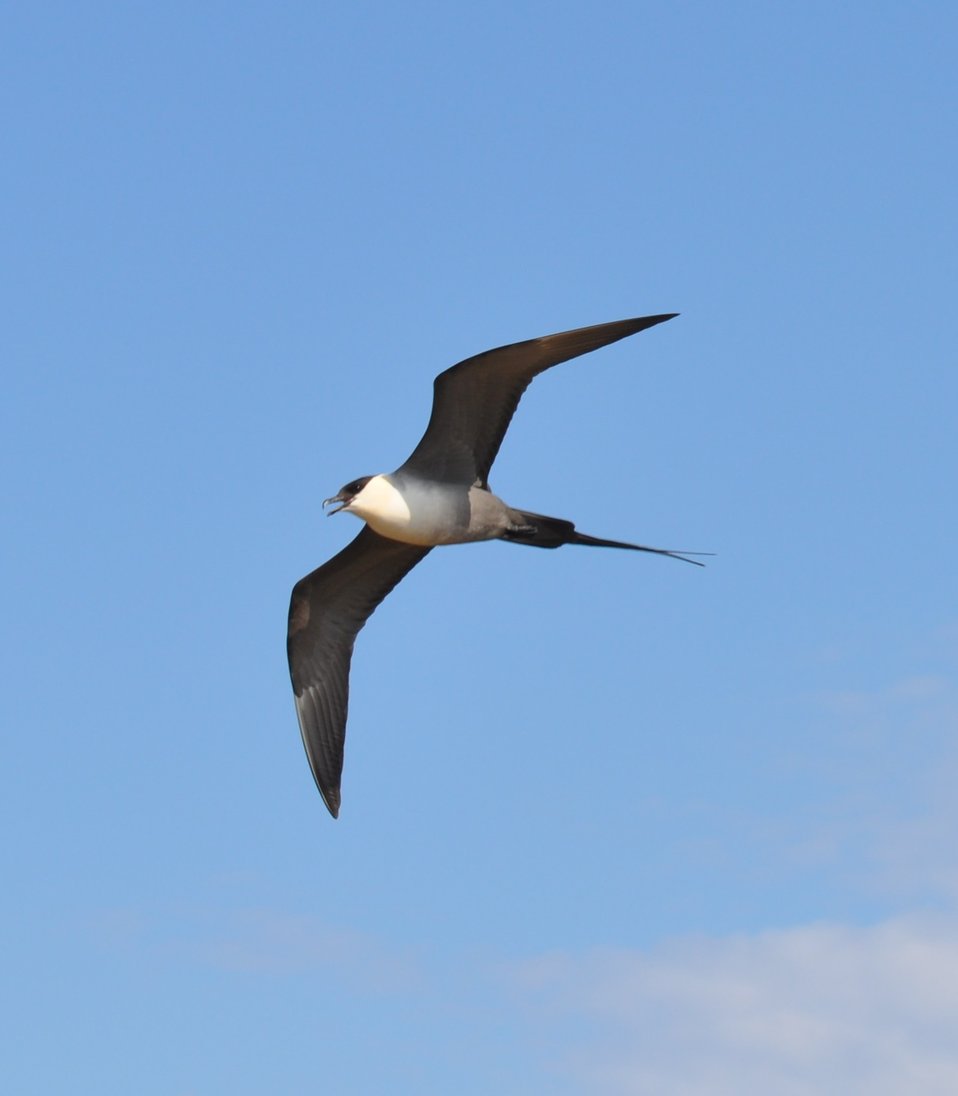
Long-tailed Jaeger

Andreafsky wilderness, Yukon Delta National Wildlife Refuge